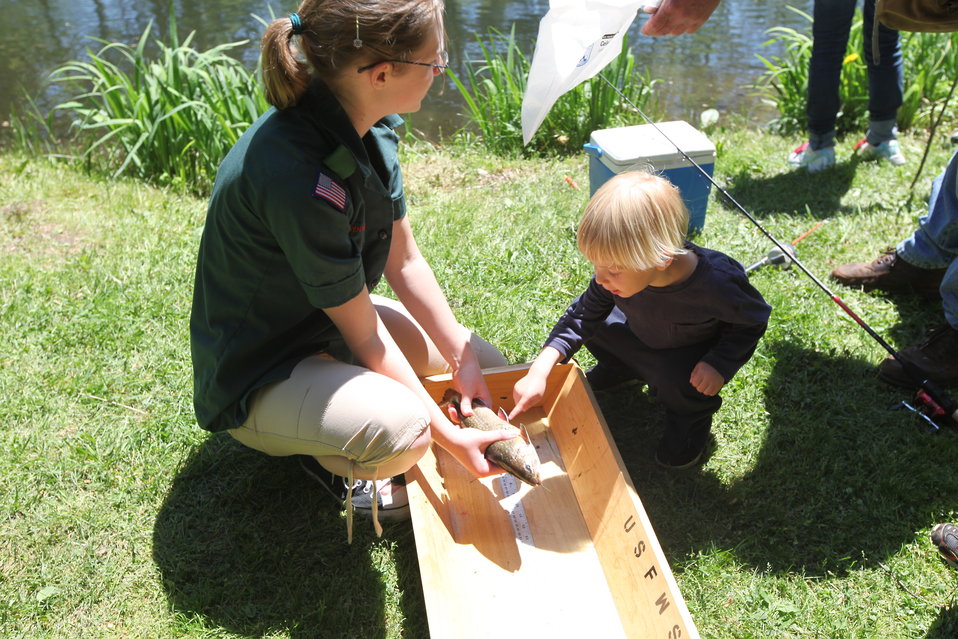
Youth Fishing Derby 2012

Megan Nagel/USFWS